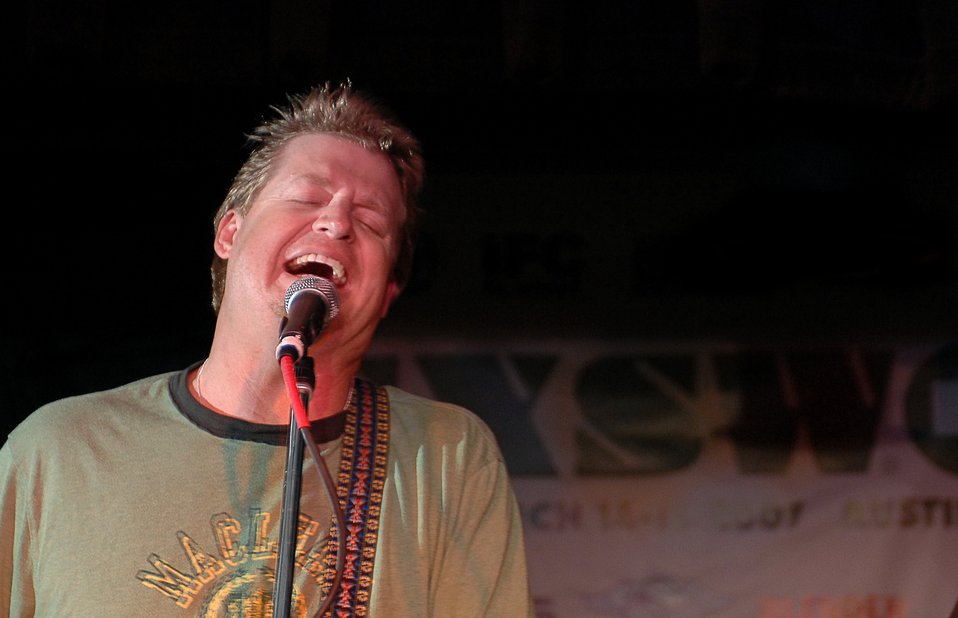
Country artist Robison eager to entertain in Iraq, Kuwait

Country music artist Charlie Robison and his band play for a packed house during a concert at the South by Southwest concert series March 16 in Austin, Texas. Mr. Robison will be entertaining deployed servicemembers in Iraq and Kuwait, until March 27, as part of an Armed Forces Entertainment show.